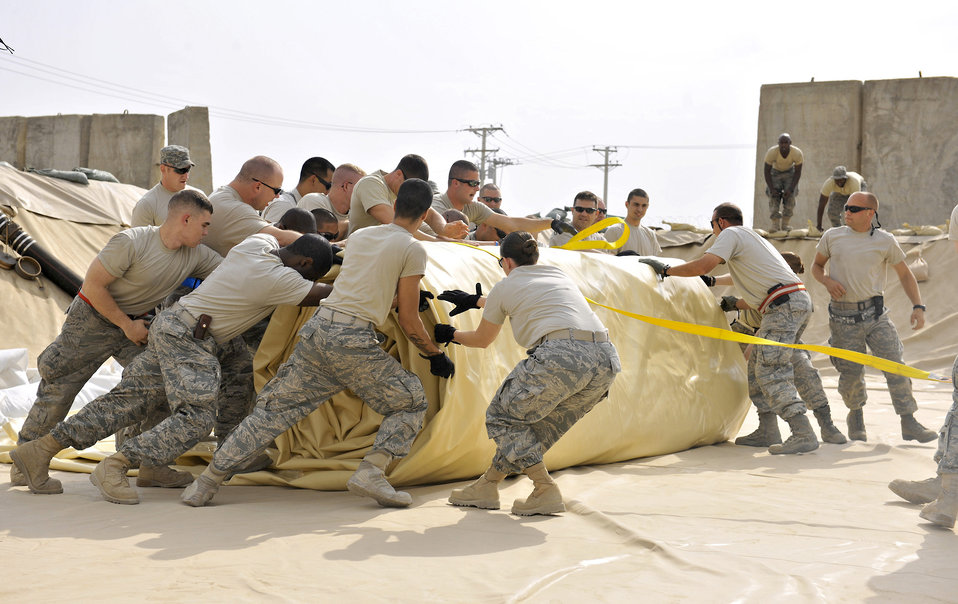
All together now...

Airmen assigned to the 455th Expeditionary Logistics Readiness Squadron unfurl a new fuel bladder Aug. 31. 2010, at Bagram Airfield, Afghanistan. The new fuel bladder can hold 200,000 gallons of jet fuel.